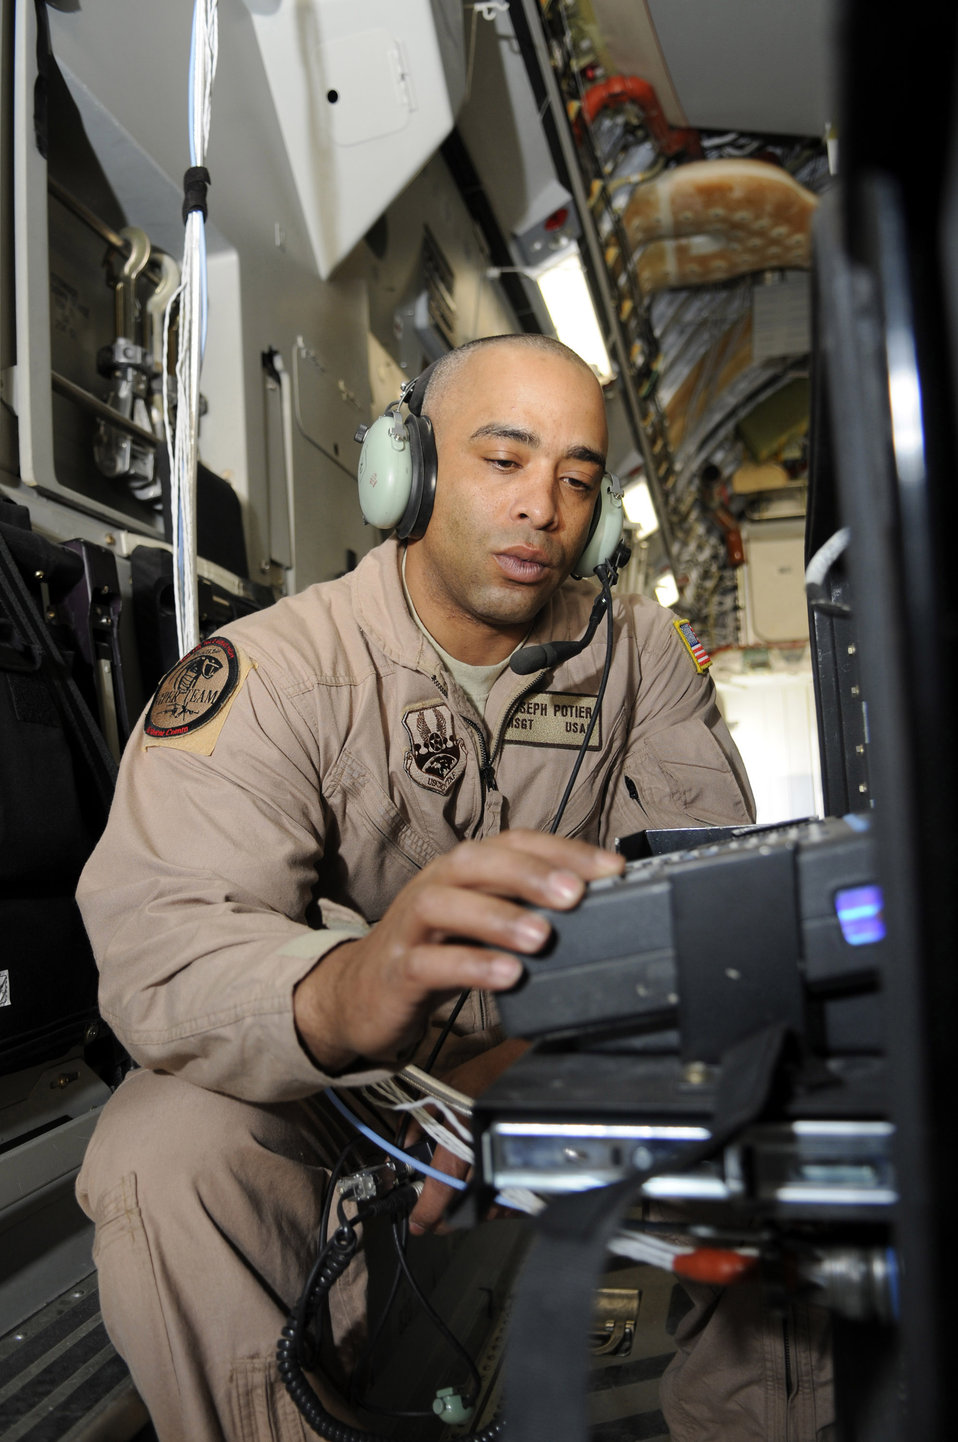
Can you hear me?

Master Sgt. Joseph Potier checks secure communications Feb. 19 while on a C-17 Globemaster III over Southwest Asia. He is with the 379th Expeditionary Communications Squadron.